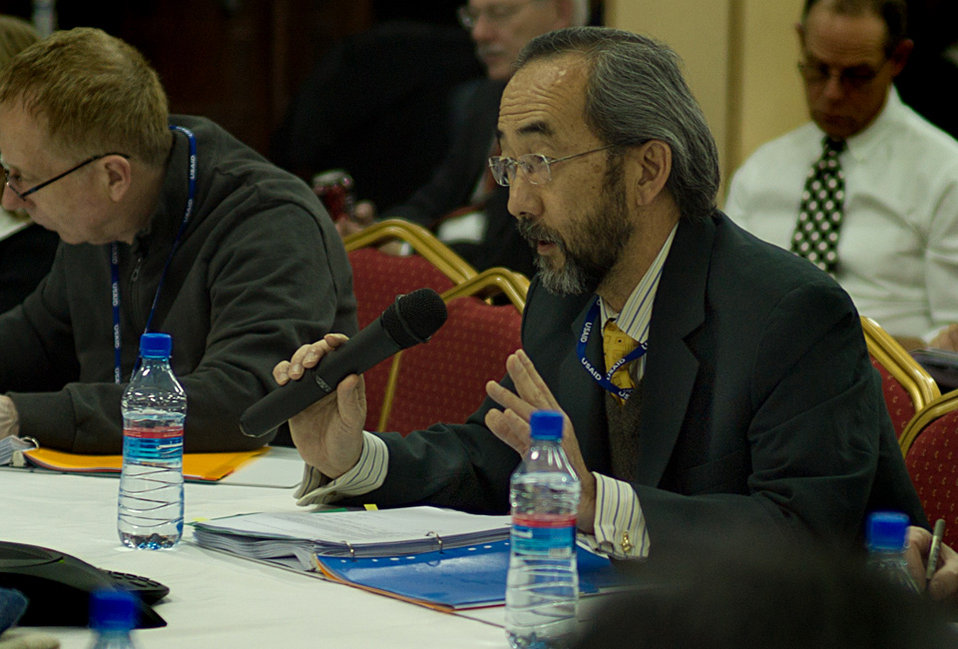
Ken discussing a point